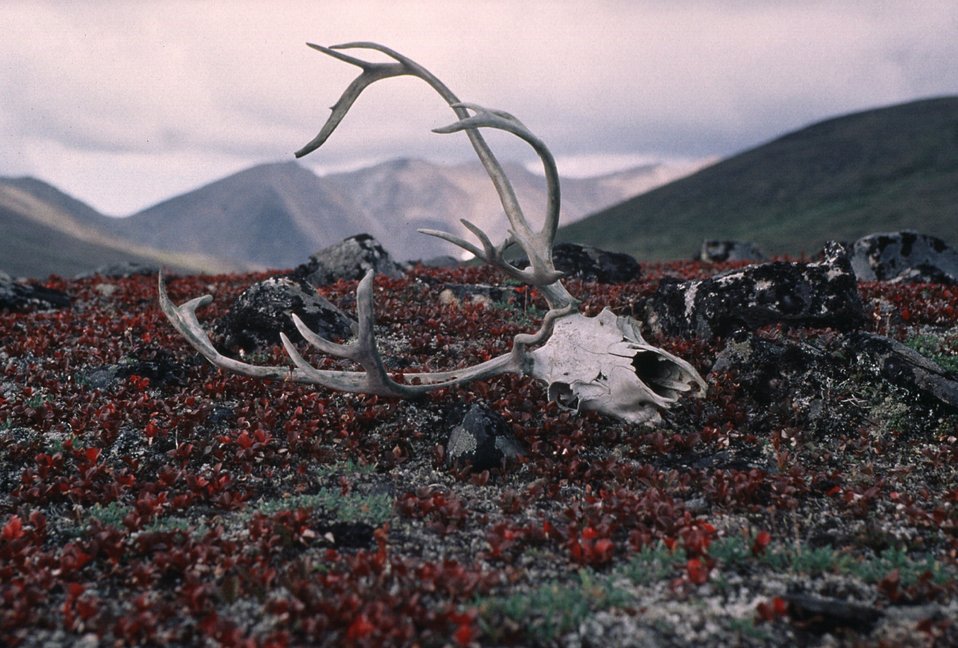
Caribou skull on tundra, Seward Peninsula, near Salmon Lake